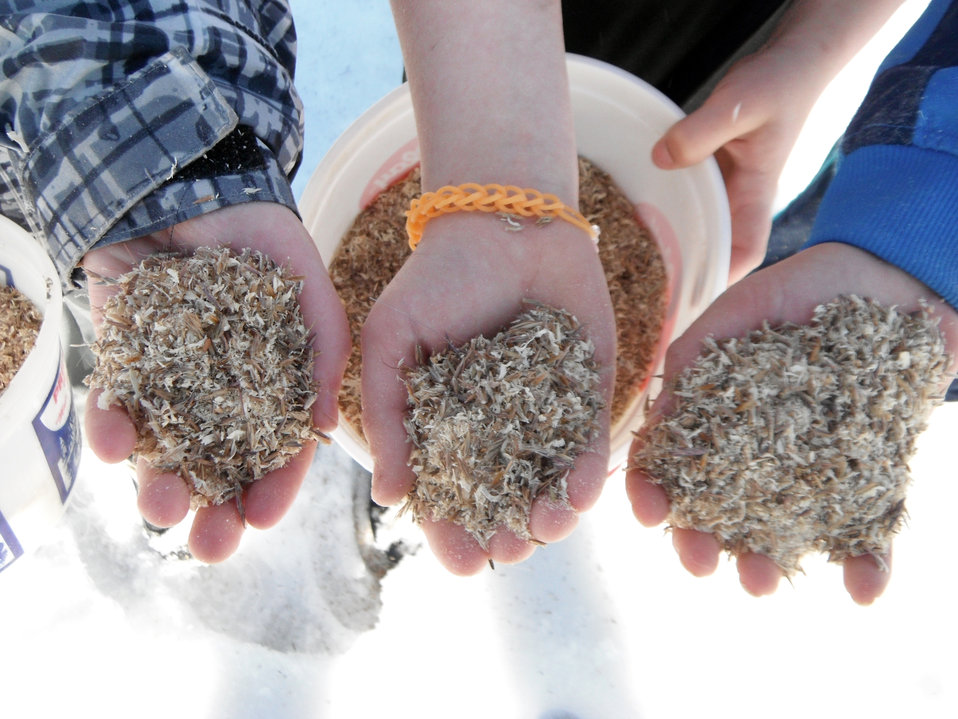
Seed Mixer

Fergus Falls Wetland Management District and Prairie Science students sowed at least nine species of native grasses and at least 15 species of native forbs. The seeds were purchased in advance and mixed with saw dust saved from building bird houses.